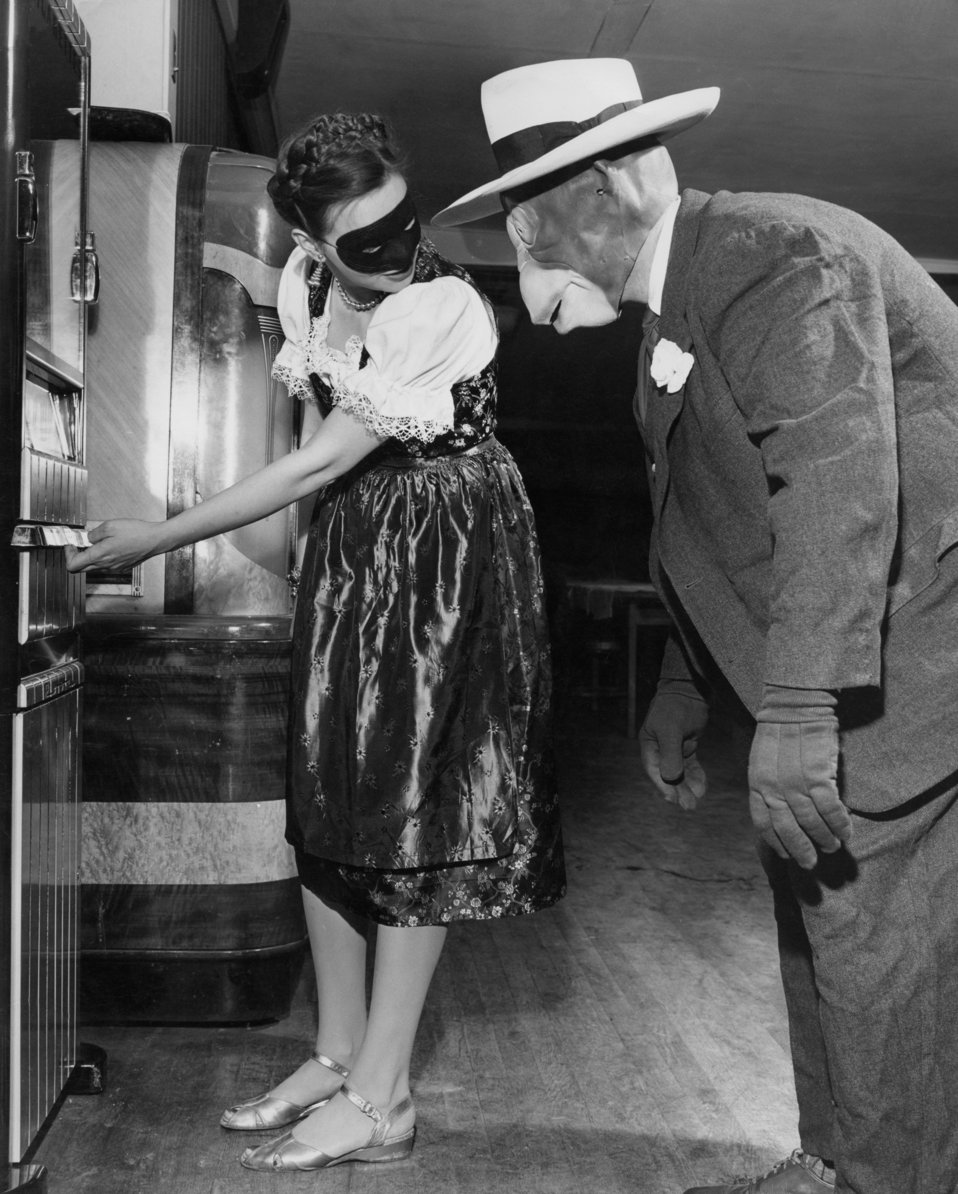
Masquerade Ball 1945 Oak Ridge

MED1824 DOE photo Ed
Westcott 1945 Mr. & Mrs. Charle Boone Oak Ridge Tennessee